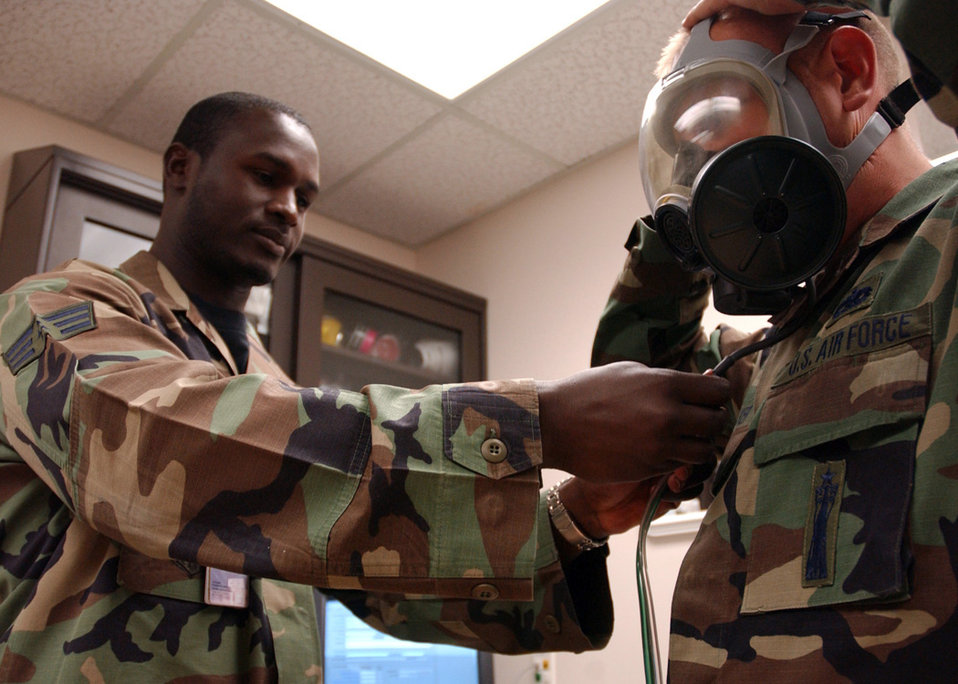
Getting fit

EIELSON AIR FORCE BASE, Alaska -- Senior Airman Mouhamed Gadiaga (left) hooks up Staff Sgt. Eric Straker's gas mask to a monitoring device to ensure a proper seal and fit. Airman Gadiaga is assigned to the 354th Medical Operations Squadron, and Sergeant Straker is assigned to the 354th Maintenance Squadron.